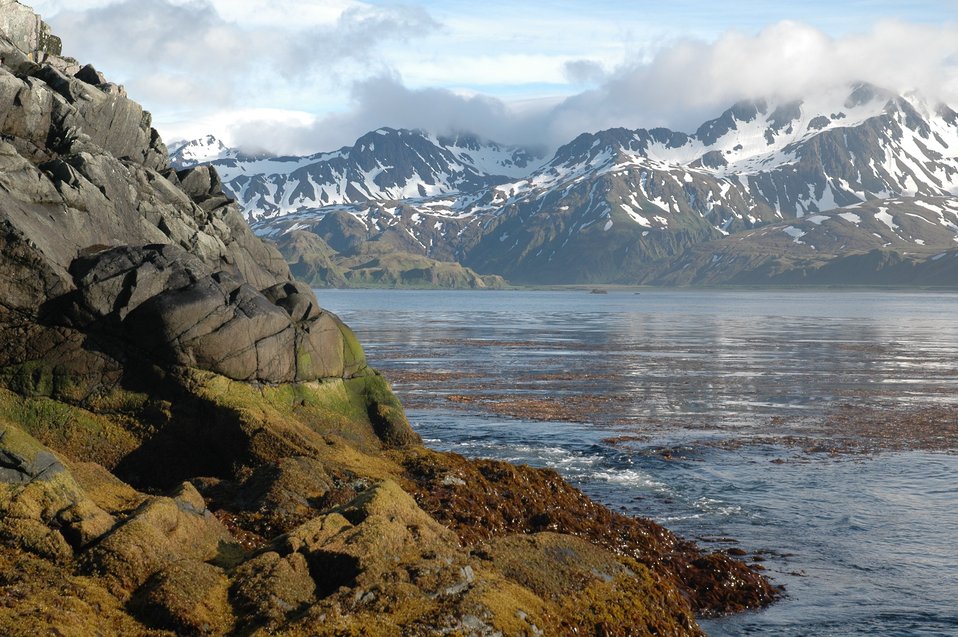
Kelp forest, calm water and spectacular mountain scenery